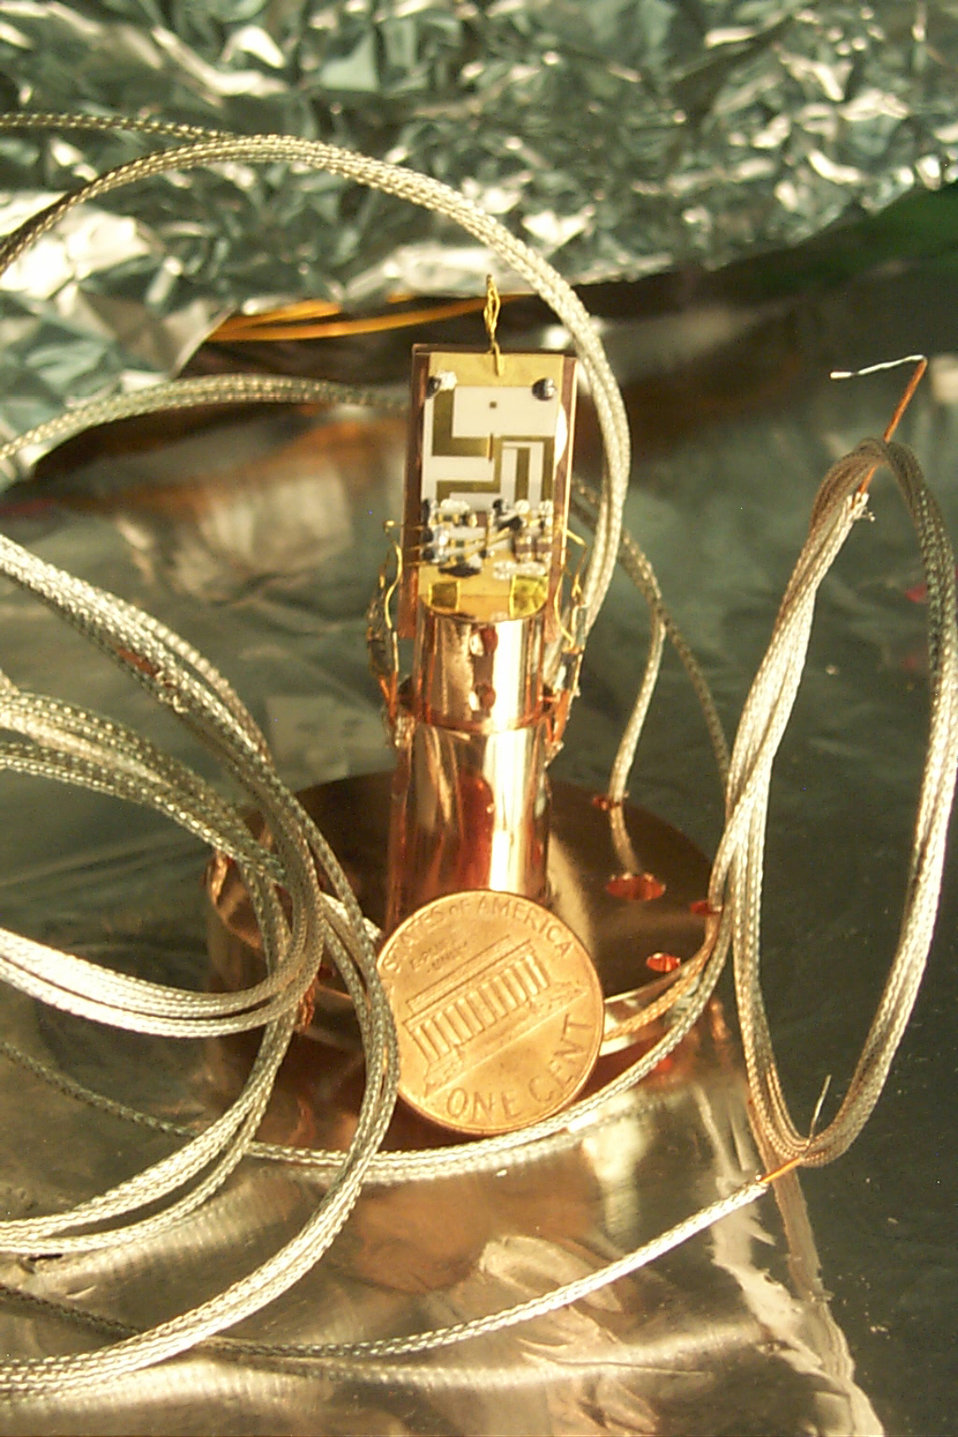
Tandem Ions

NIST researchers trapped aluminum and beryllium ions in the device above in experiments designed to produce an atomic clock that could be significantly more precise than today's most accurate atomic clocks.